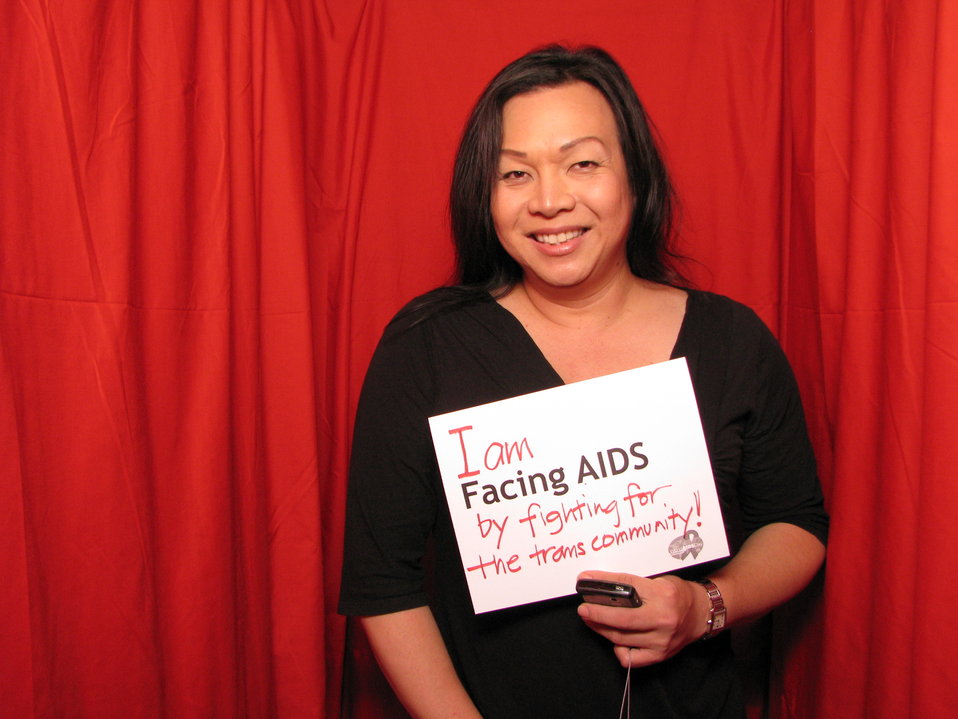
I am FACING AIDS by fighting for the trans comunity!

From the AIDS.gov photo booth at the U.S. Conference on AIDS, September 2010 (Orlando, FL).